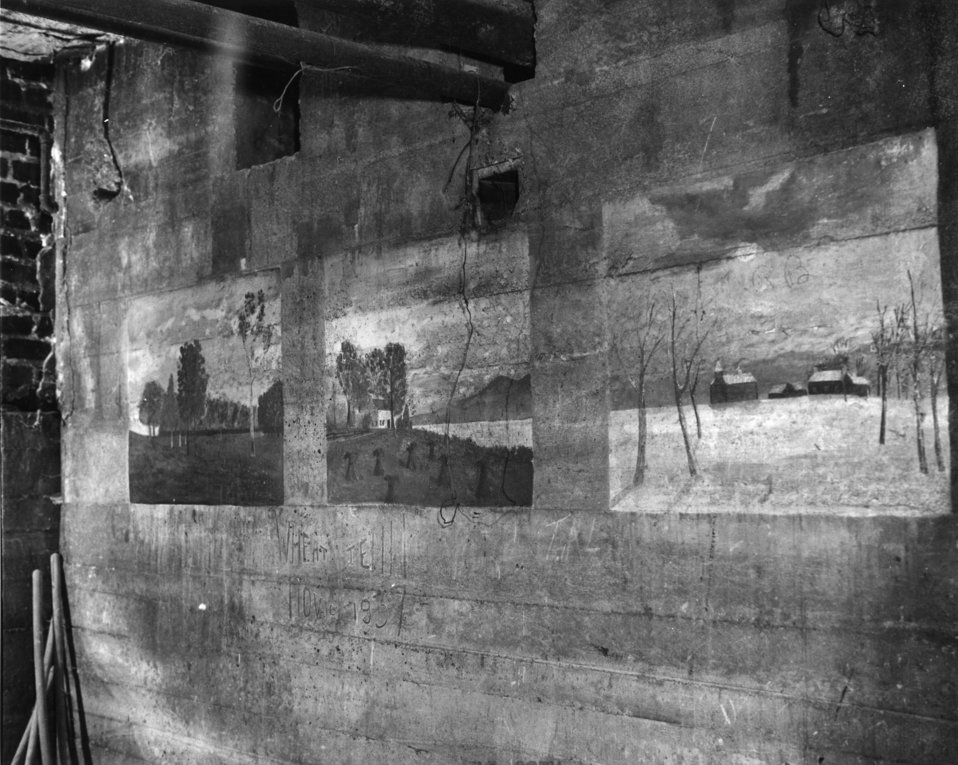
Painting of Wheat School by Edgar Ward 1940 Oak Ridge

MED-291 DOE photo Ed Westcott 1940 Oak Ridge Tennessee